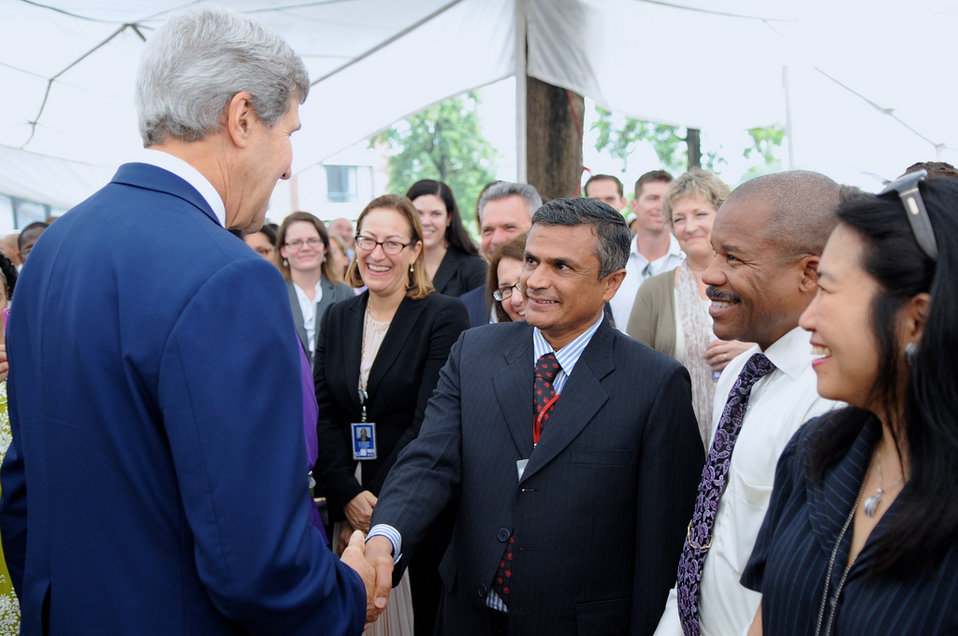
Secretary Kerry greets longtime Embassy Islamabad employee

U.S. Secretary of State John Kerry greets Abdullah Zafar who has been employed for 30 years at the U.S. Embassy in Islamabad, Pakistan, on August 1, 2013.